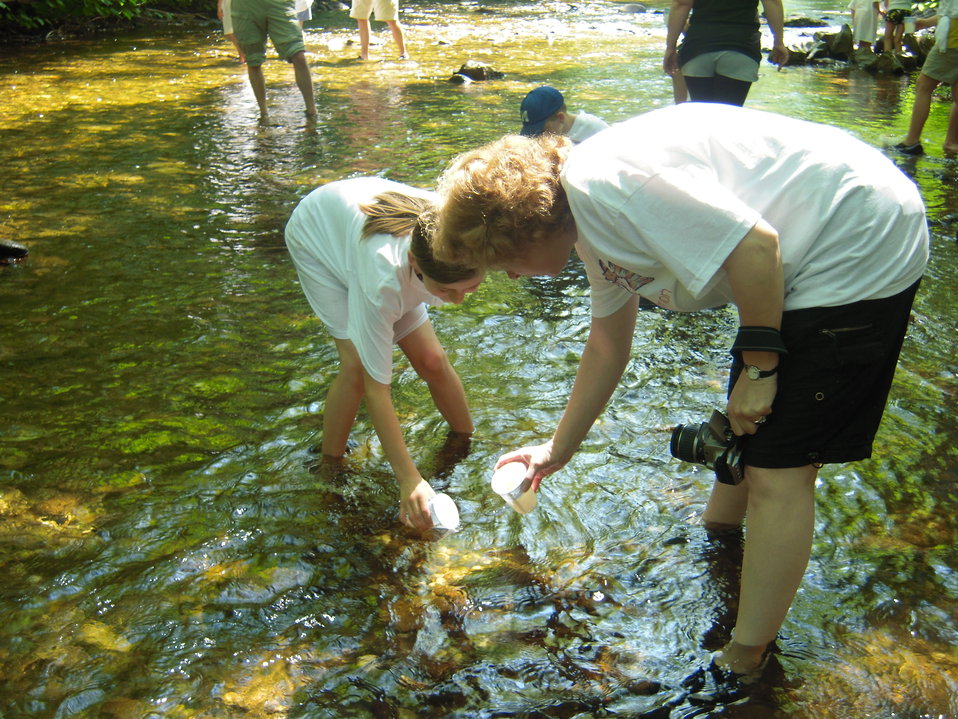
Teacher and student release fry